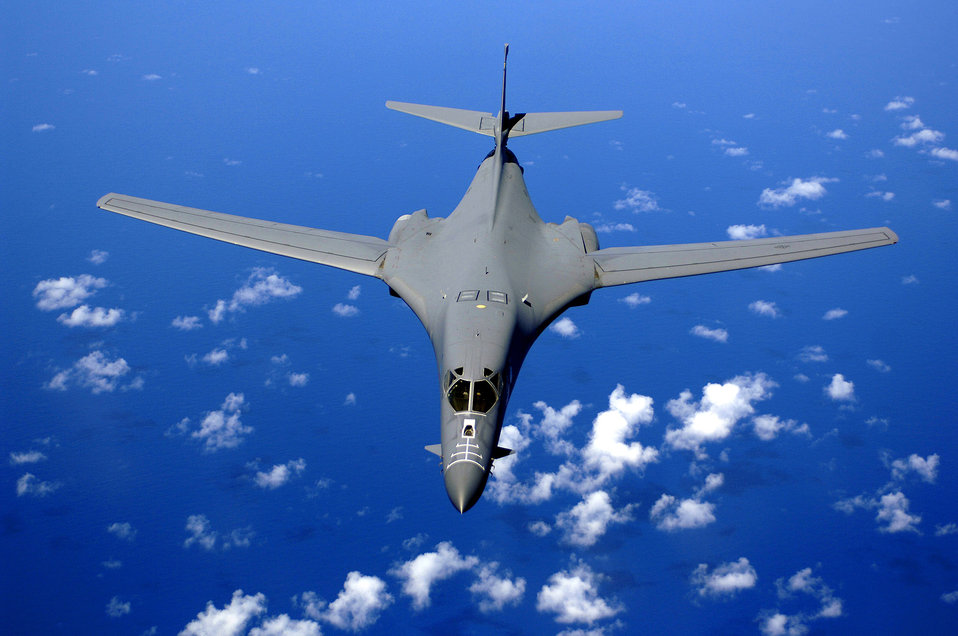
Soaring

OVER THE PACIFIC OCEAN -- A B-1B Lancer drops back after air refueling training Sept. 30. The B-1B is deployed to Andersen Air Force Base, Guam, as part of the Pacific Command's continuous bomber presence in the Asia-Pacific region, enhancing regional security and the U.S. commitment to the Western Pacific. The B1 is from the 28th Bomb Wing, Ellsworth AFB, South Dakota.